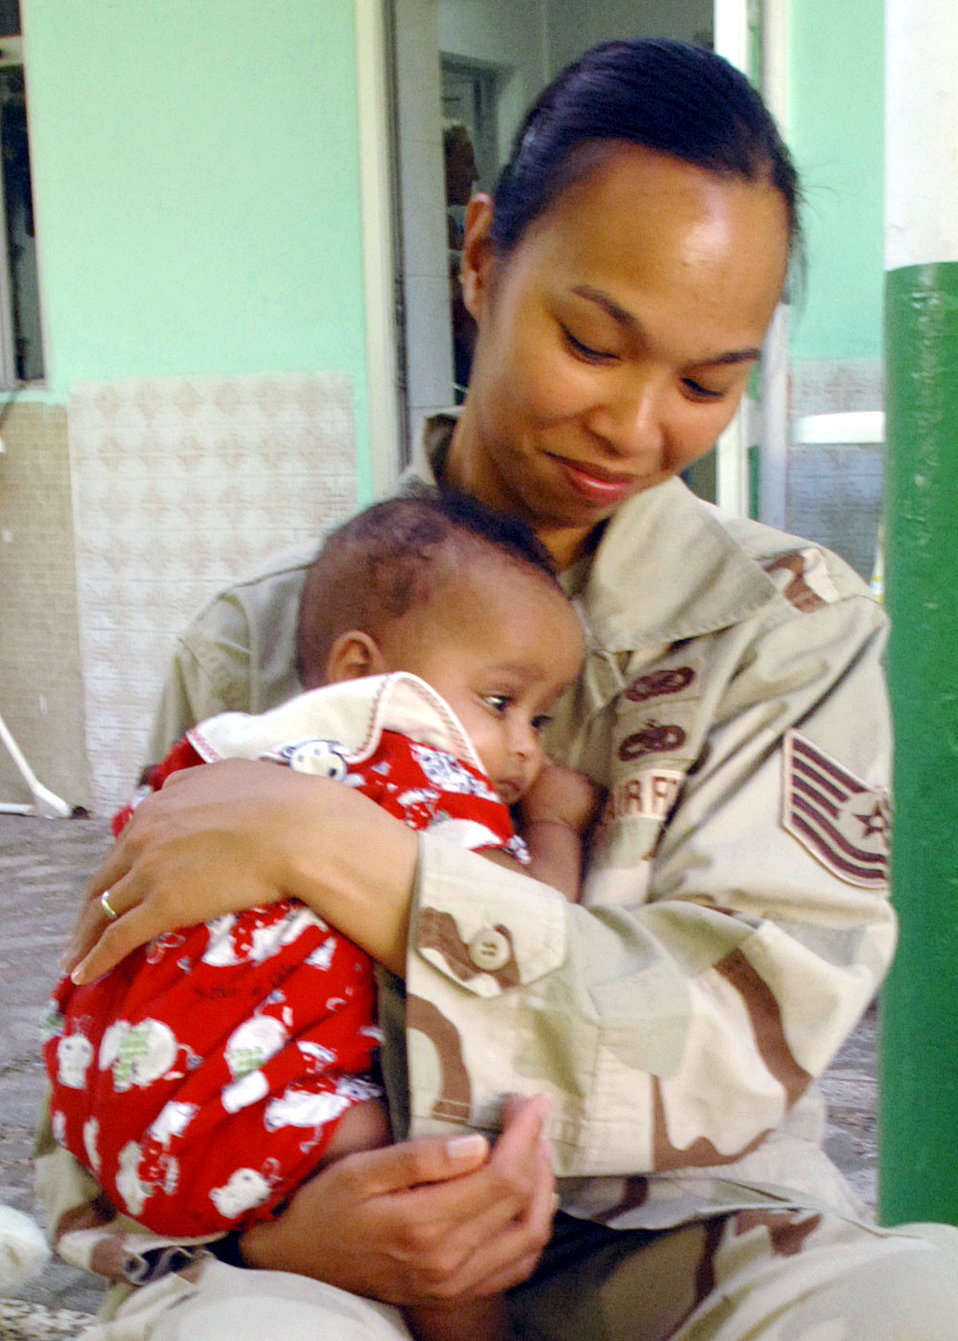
Servicemembers provide a little TLC

Tech. Sgt. Renee Crisostomo comforts an orphaned baby at the Franciscan Missionaries of Notre Dame Baby Orphanage in Djibouti City, Djibouti. Sergeant Crisostomo, a broadcaster on the U.S. Central Command Air Forces News Team, was on assignment to feature Airmen supporting the Combined Joint Task Force - Horn of Africa at Camp Lemonier, Djibouti, when she paused filming and volunteered at the orphanage. The Camp Lemonier chapel staff arranges visits to this orphanage three times a week.